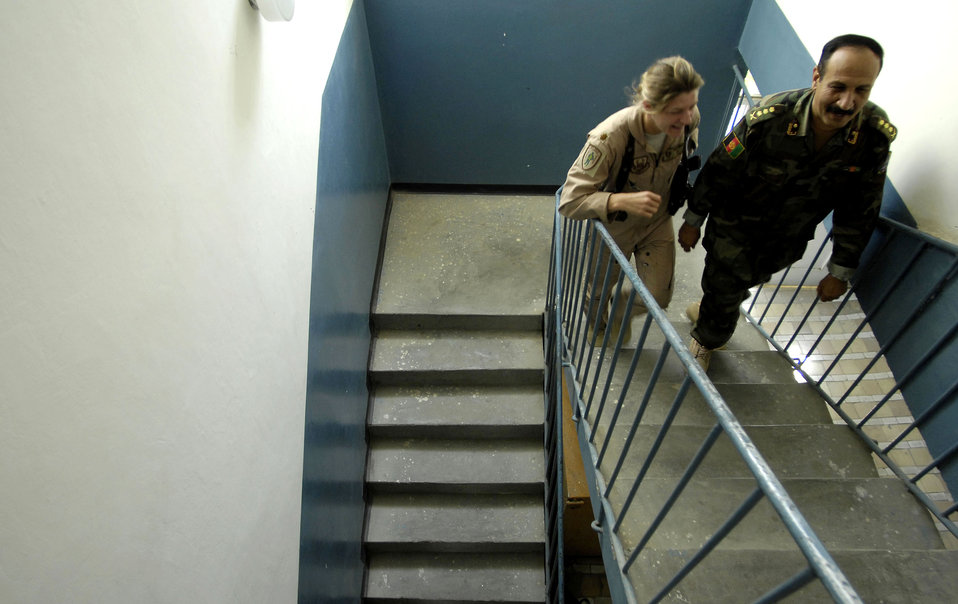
Airmen help Afghans stand up flight medicine clinic

Maj. Mical Kupka talks with Col. Mayel Rasoul as they climb the stairs at the Afghan National army air corps clinic Oct. 17 in Kabul, Afghanistan. Major Kupka of the air corps advisers group is the senior aeromedical mentor at the clinic, working hand-in-hand with Colonel Rasoul, the clinic commander and air corps surgeon. Major Kupka is a flight surgeon deployed to Kabul International Airport from Moody Air Force Base, Ga.